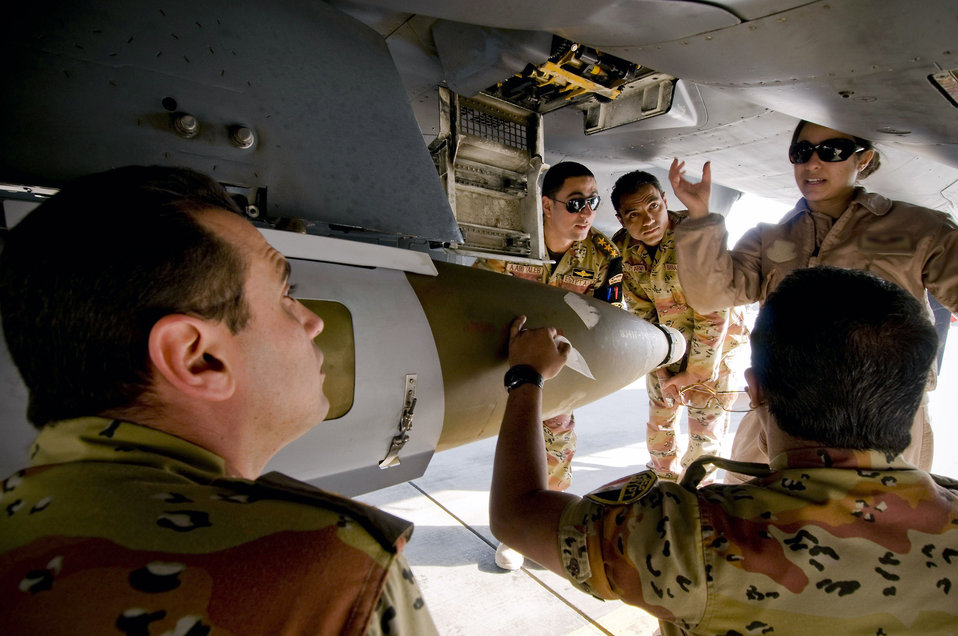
Egyptians learn airpower

An F-15E Strike Eagle weapons systems officer explains the role of the F-15E's machine gun to a group of Egyptian medical personnel at Bagram Airfield, Afghanistan, Nov. 29. Being from Egyptian descent, the WSO was able to give most the tour in Arabic, avoiding any potential language barriers.